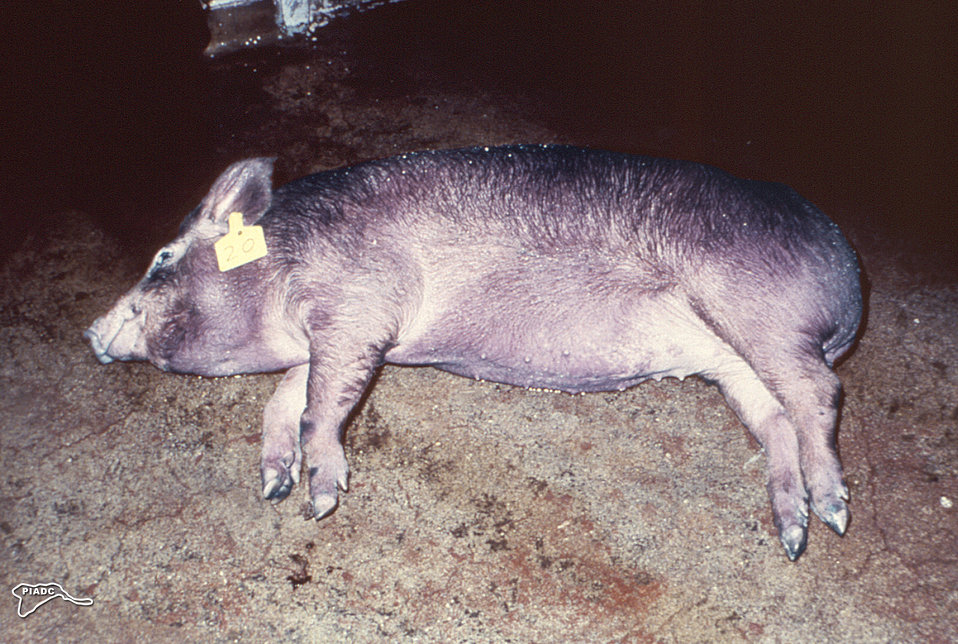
From the 'Illustrated Manual for the Recognition and Diagnosis of Certain Animal Diseases', published in 1982, by the Mexico-United States Commission for the Prevention of Foot and Mouth Disease, this photograph depicts a domesticated pig that was exhibiting symptoms indicative of African swine fever (ASF), which included marked cyanotic changes in its skin's appearance.